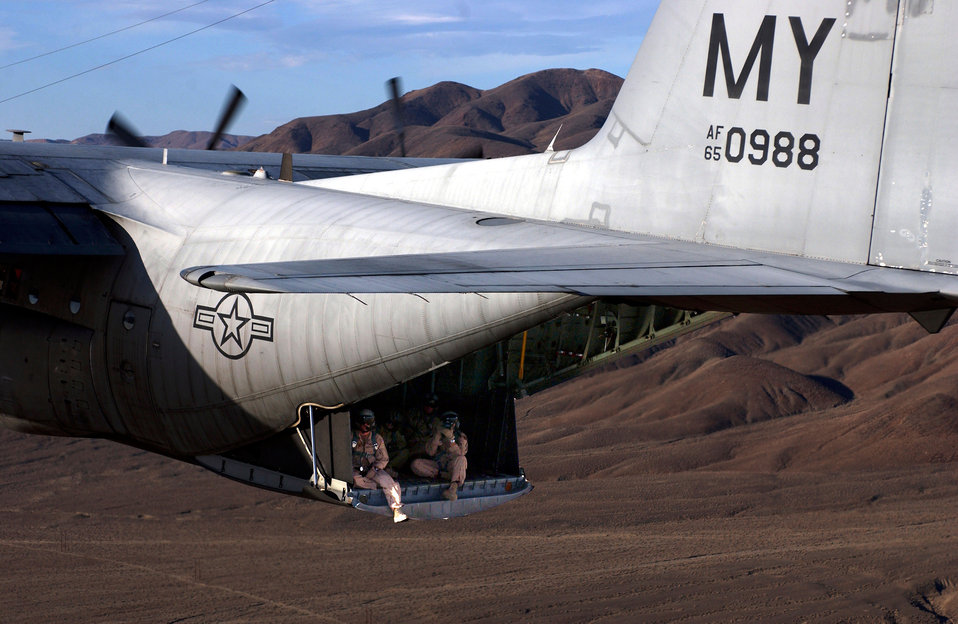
Smile for the camera

NAVAL AIR STATION FALLON, Nev. -- Staff Sgt. Aaron Allmon (right), a photographer from the 1st Combat Camera Squadron, documents an aerial refueling mission during Desert Rescue XI, Aug. 13. The joint-service combat search and rescue training exercise simulates downed aircrew behind enemy lines and allows airmen to practice rescue-related missions.